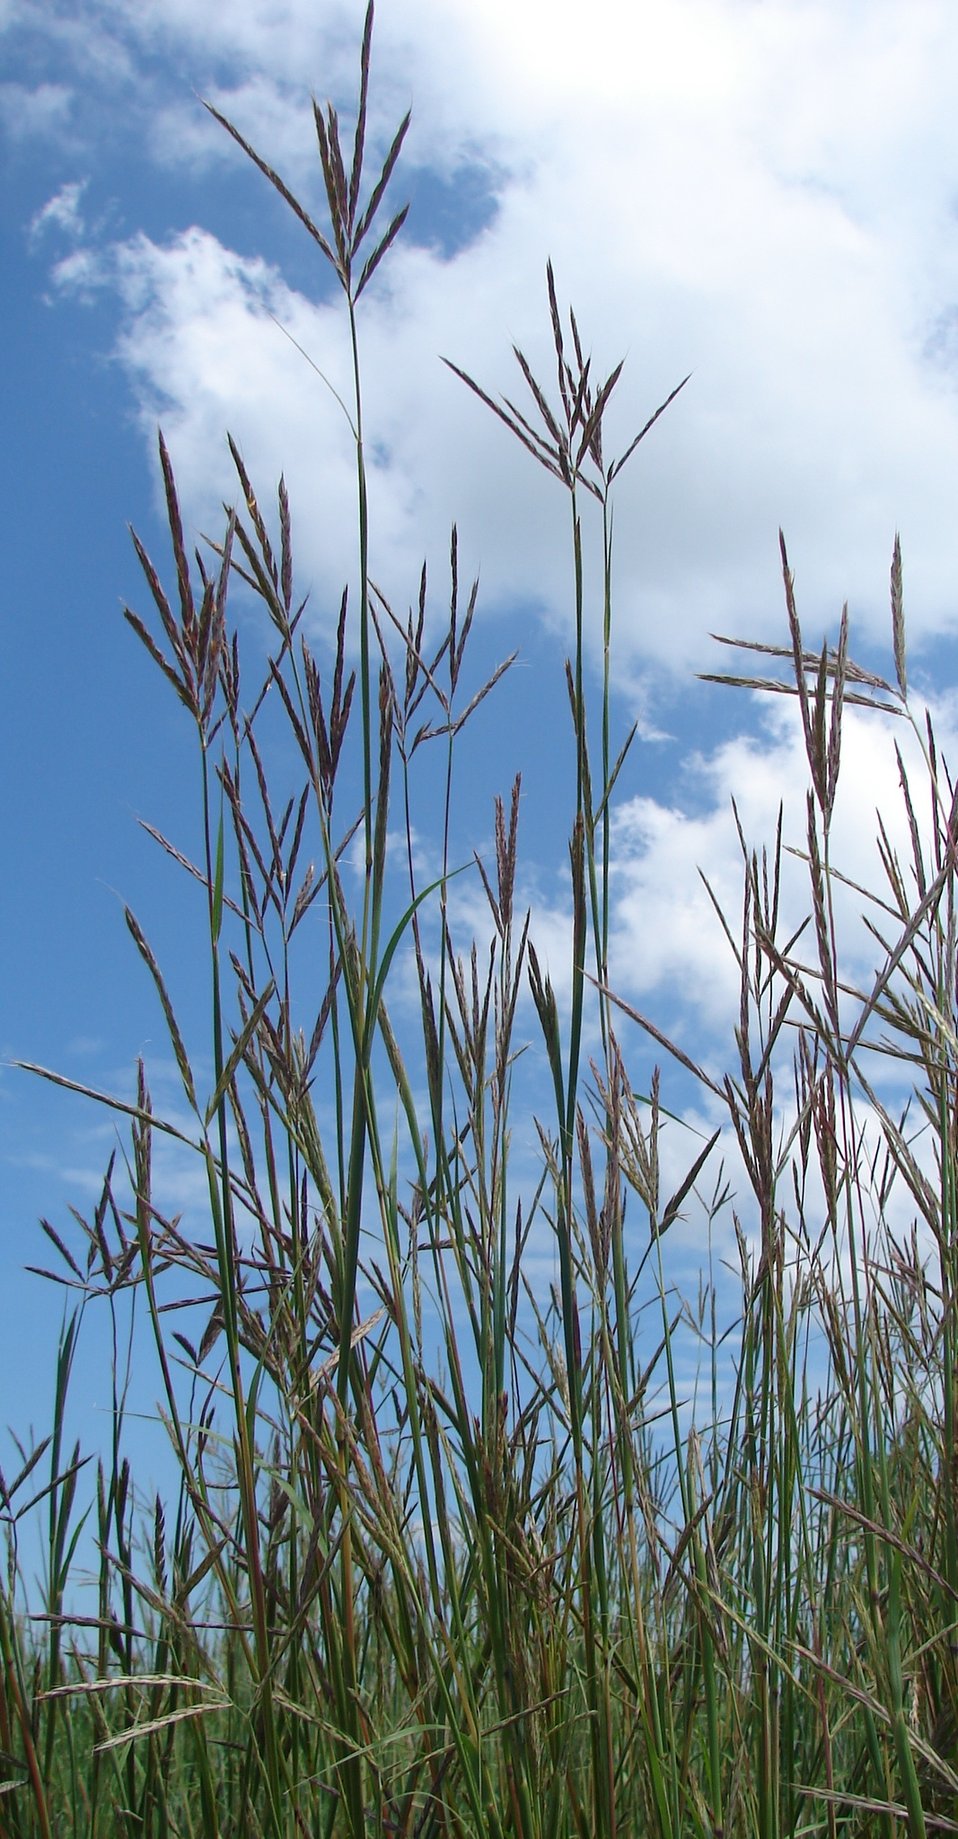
Big bluestem is a native tallgrass prairie plant that grows to heights in excess of 6 feet tall.

Credit: Jennifer Briggs / USFWS

Photo Contest Entry #114